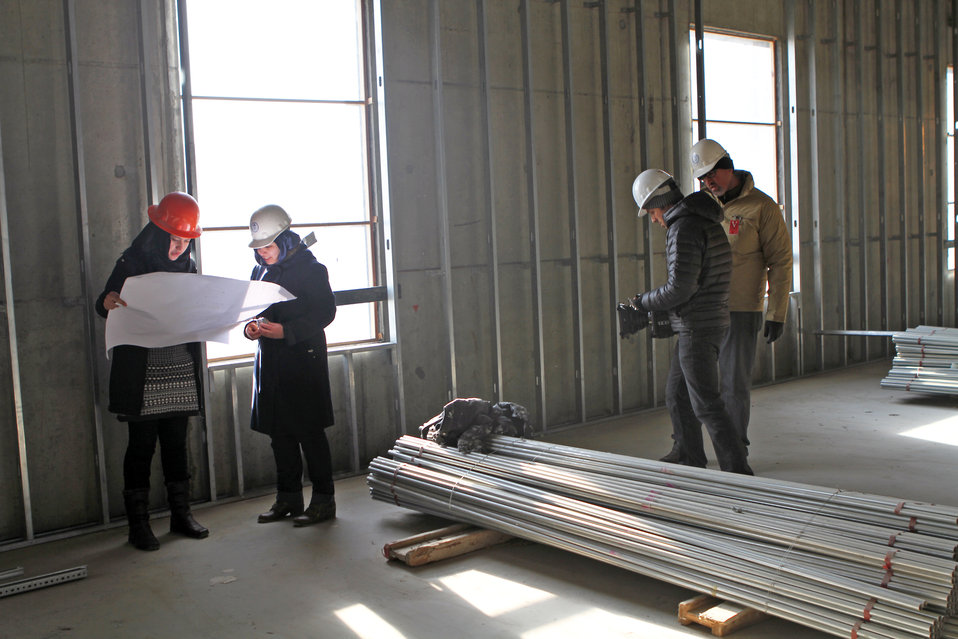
Hollywood film crew shoots recent graduates from USAID’s Female Engineering Internship program for upcoming videos (3)